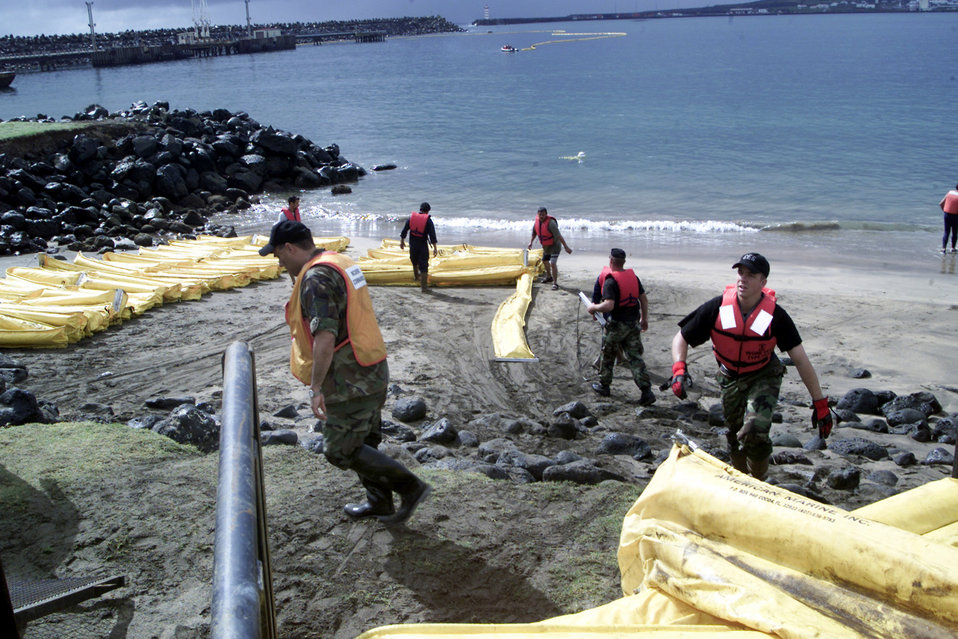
Island Exercise

PORTUGAL -- Participants in a fuel-spill exercise prepare the